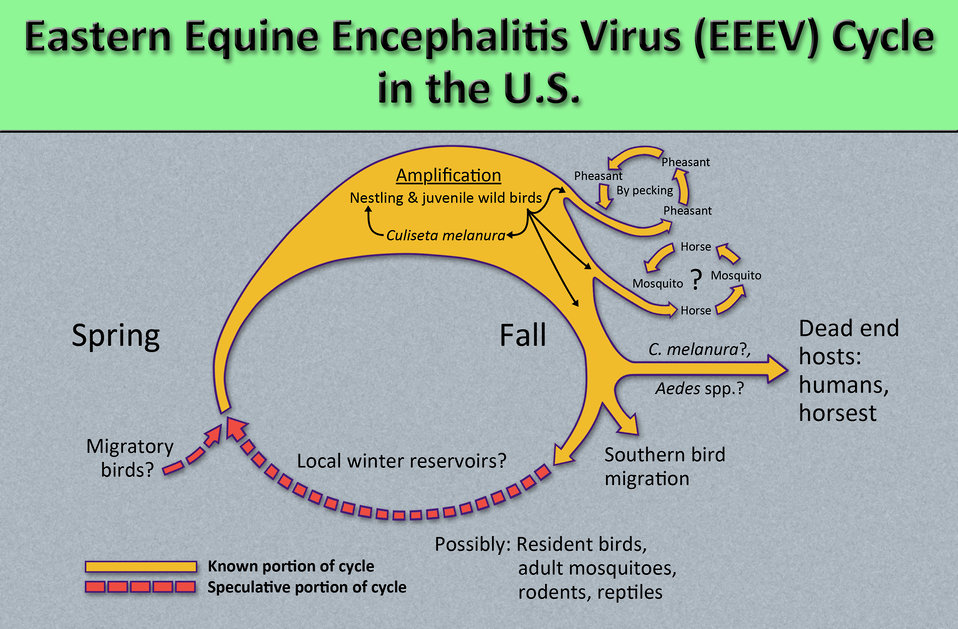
This diagram illustrates the methods by which the arbovirus Eastern equine encephalitis virus (EEEV) reproduces and amplifies itself in avian populations within the U.S., and is subsequently transmitted to human beings and horses, as the dead end hosts through the bite of a number of differnt mosquito species. See PHIL 14999, for a variation of this cycle, which does not includes the possible use of equines as a mosquito food source, which in this case, acts to transmit the virus from horse to horse through the bites of feeding mosquitoes, rather than the sole equine dead end host model, which is shown in 14999.